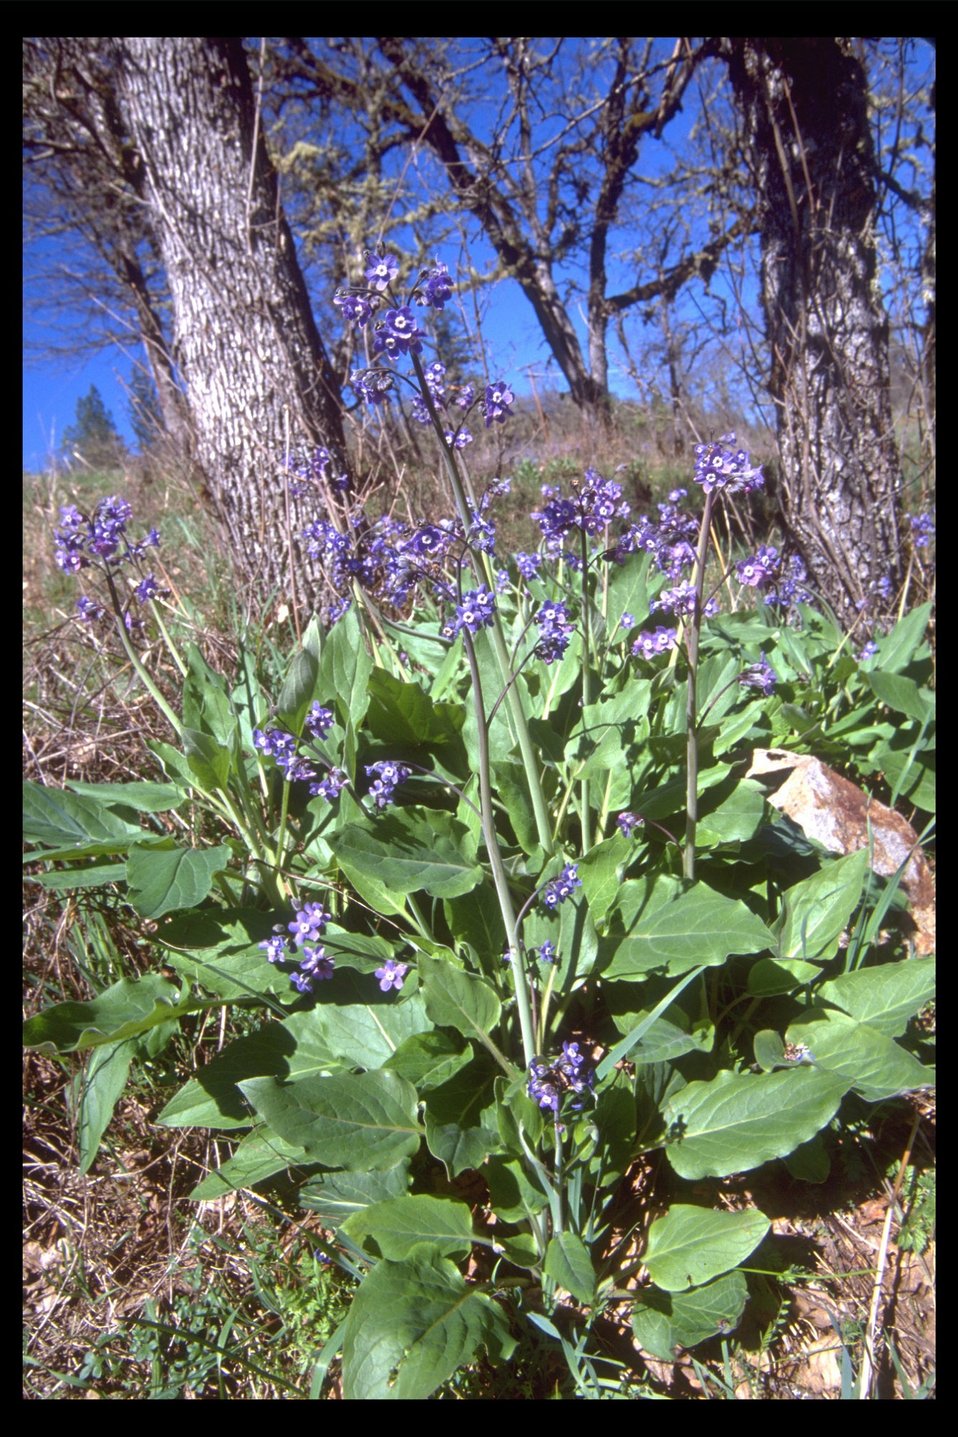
Grand Hound's Tongue (Cynoglossum grande) in the Upper Table Rock area.